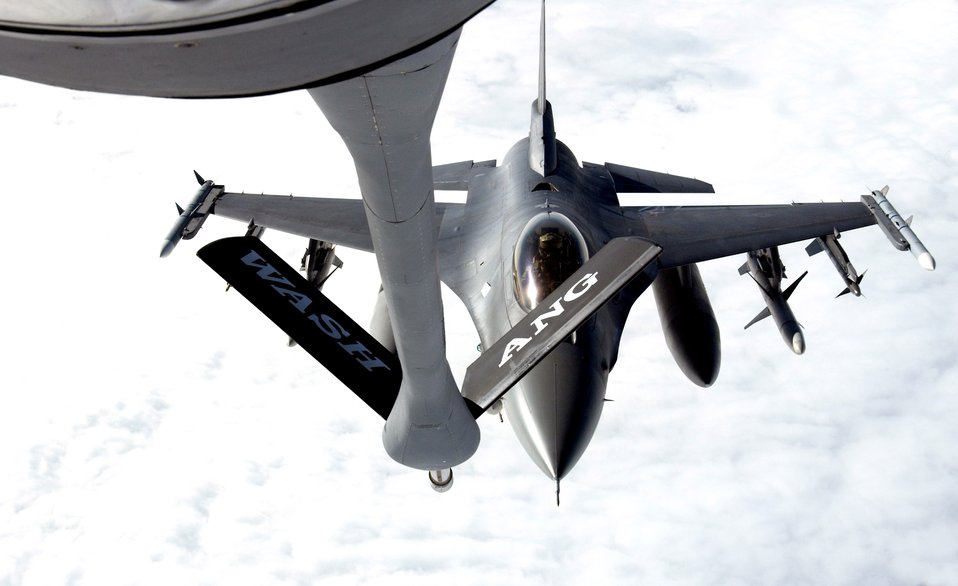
Red Flag 06-1, Nellis A.F.B.

NELLIS AIR FORCE BASE, Nev. (AFPN) -- An F-16 Fighting Falcon moves in to receive fuel from a KC-135 Stratotanker Jan. 30, during Red Flag 06-1 being held here Jan. 21 through Feb. 18. Red Flag tests aircrews' war-fighting skills in realistic combat situations. More than 85 aircraft, including B-2 Spirit bombers are involved. The aircraft are flying missions day and night to the nearby Nevada Test and Training Range where they simulate air war. Along with the Air Force, units from the Army, Navy, Marine Corps, United Kingdom and Australia are participating.